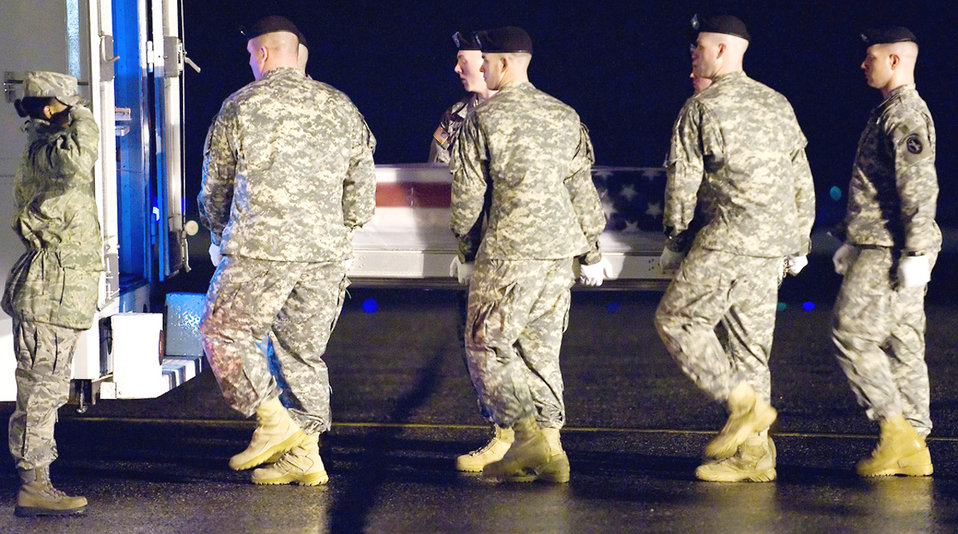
Air Force mortuary staff ensures dignity, honor for fallen

An Army carry team places a transfer case containing a fallen servicemember's remains into a vehicle during a dignified transfer Feb. 22, 2010, at Dover Air Force Base, Del. The vehicle will transport the case to the Air Force Mortuary Affairs Operations Center, where all U.S. servicemembers killed in combat are prepared for burial.